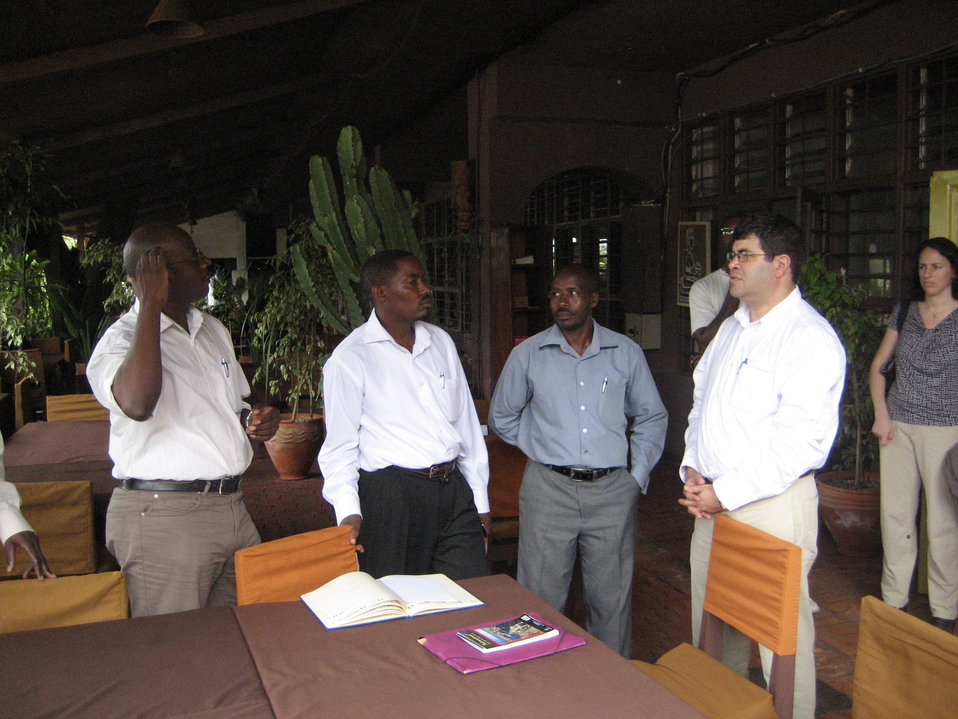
Deputy Secretary Neal Wolin’s trip to Africa 2009

Deputy Secretary Wolin meets with the chairman of the local dairymen association, which represents small-scale dairy farmers and processors to discuss the obstacles faced by smaller dairy producers. These producers account for 95% of the milk sold in Rwanda.